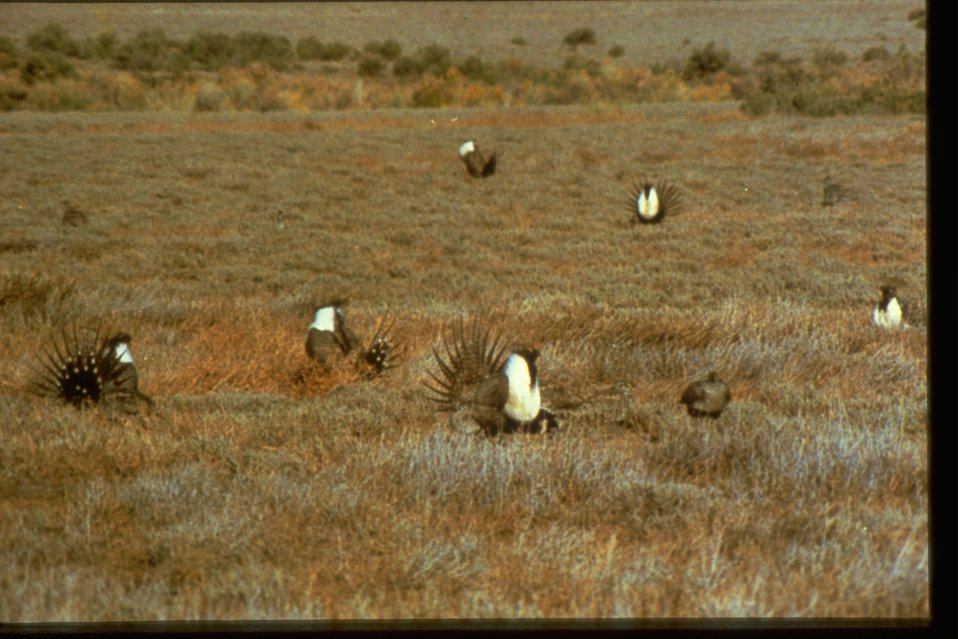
Many Sage Grouse in a field.